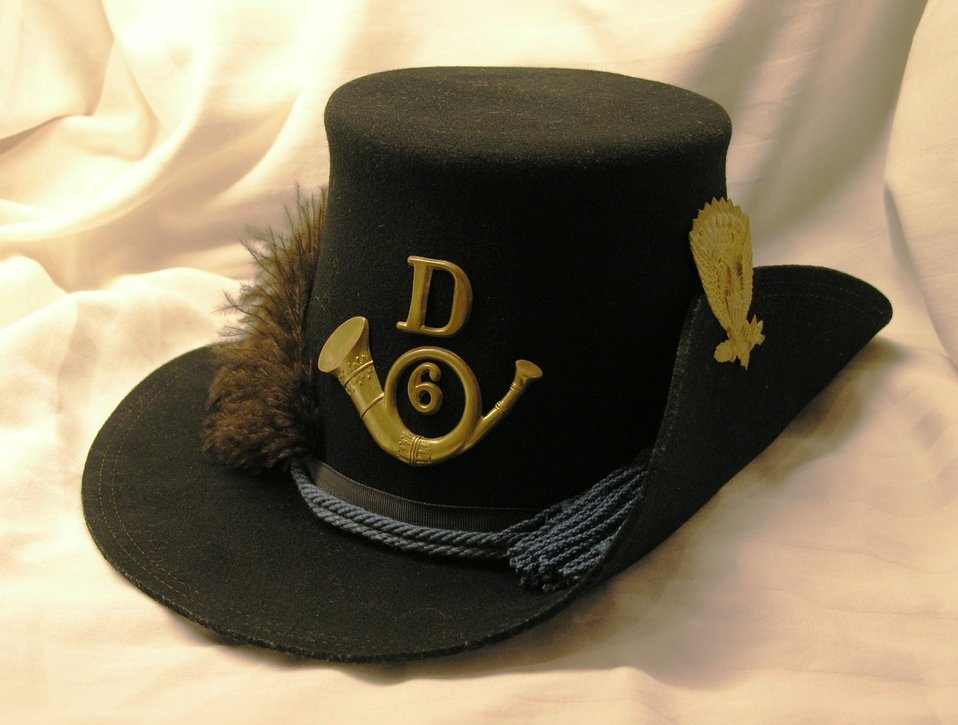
1858 Army hat, Civil War